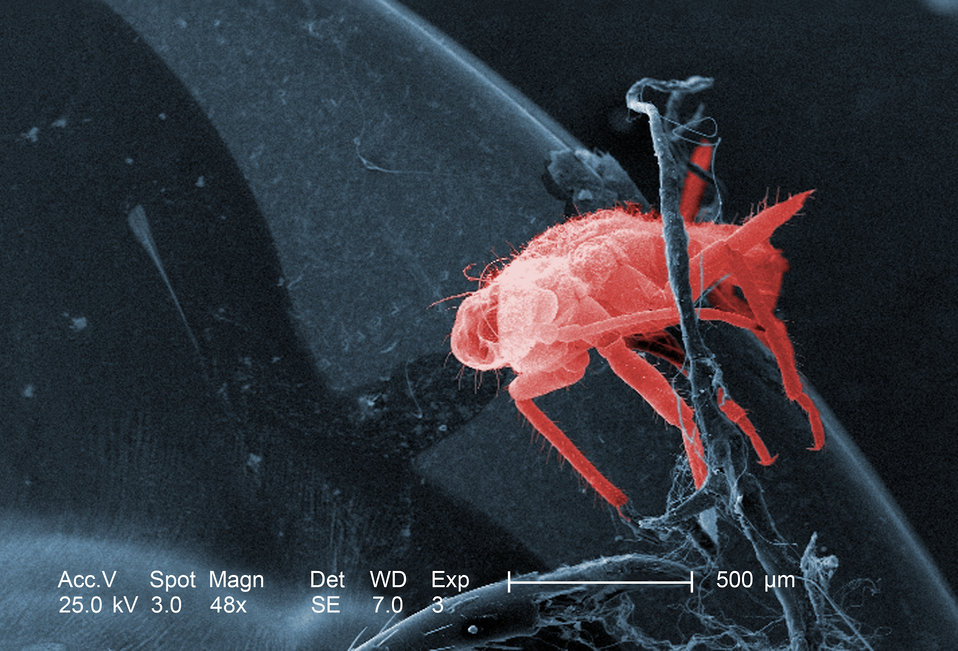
This low magnification, 48x, scanning electron micrograph (SEM) revealed the presence of a small, unidentified insect on the exoskeletal surface of what was an unidentified dragonfly that was found deceased on the grounds of the Decatur, Georgia suburbs. Though this arthropod was found here to be, what appeared to be, 'residing' on the dragonfly's body, it also may merely have been picked up by the dragonfly, as was the case with other debris such as pollen granules, or general vegetative matter, and not living as a parasitic inhabitant.